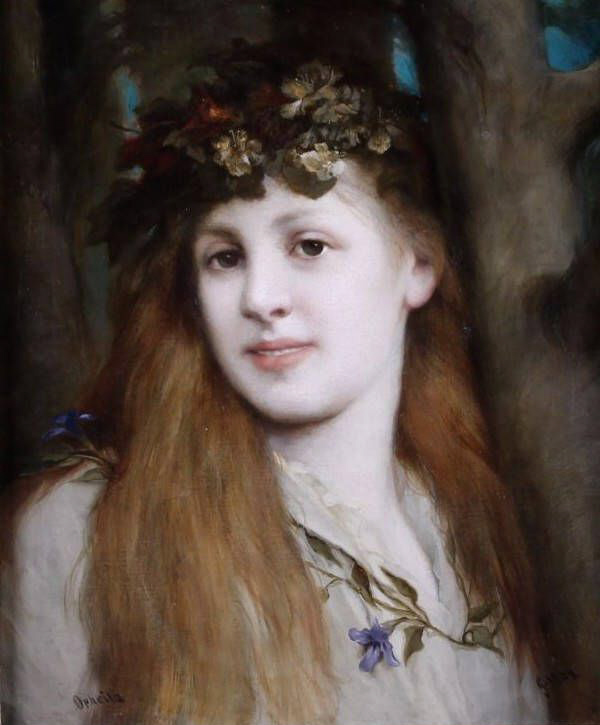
Deutsch: Ophelia (bezeichnet Opheila (sic!)), Öl auf Leinwand, 47 x 39 cm